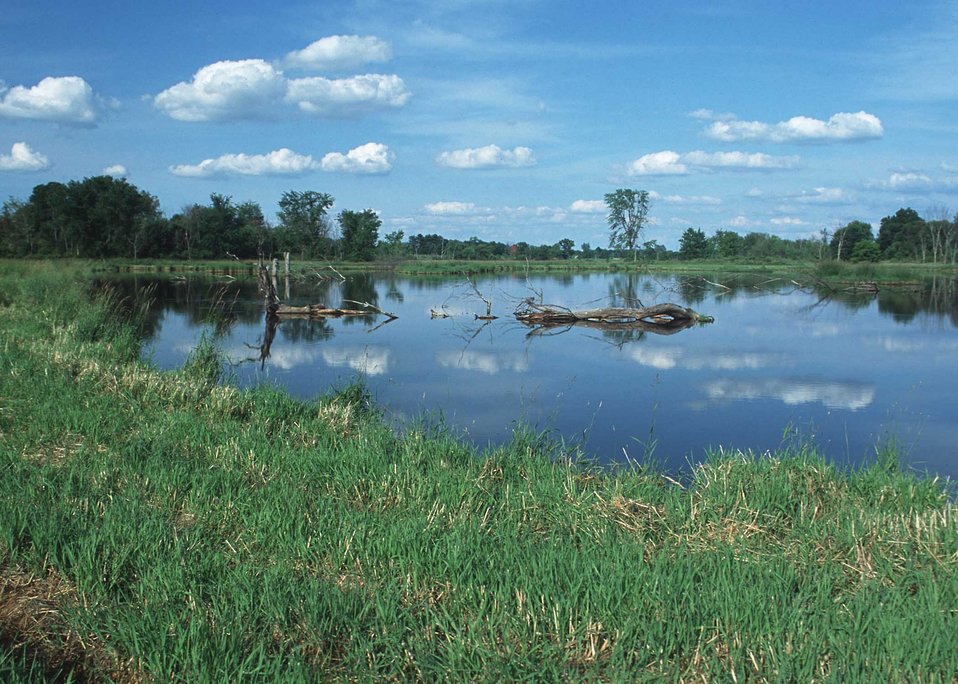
Scenic open water wetland with grass in foreground, Montcalm County, Michigan.